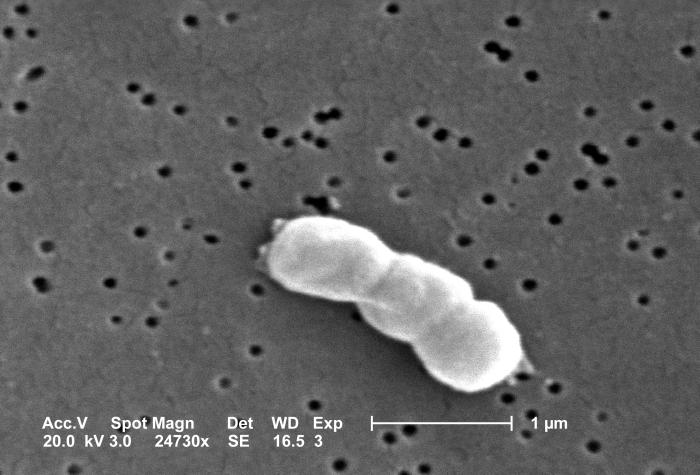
This SEM depicts a highly magnified triad of Gram-negative, non-motile Acinetobacter baumannii bacteria; Mag - 24730x.